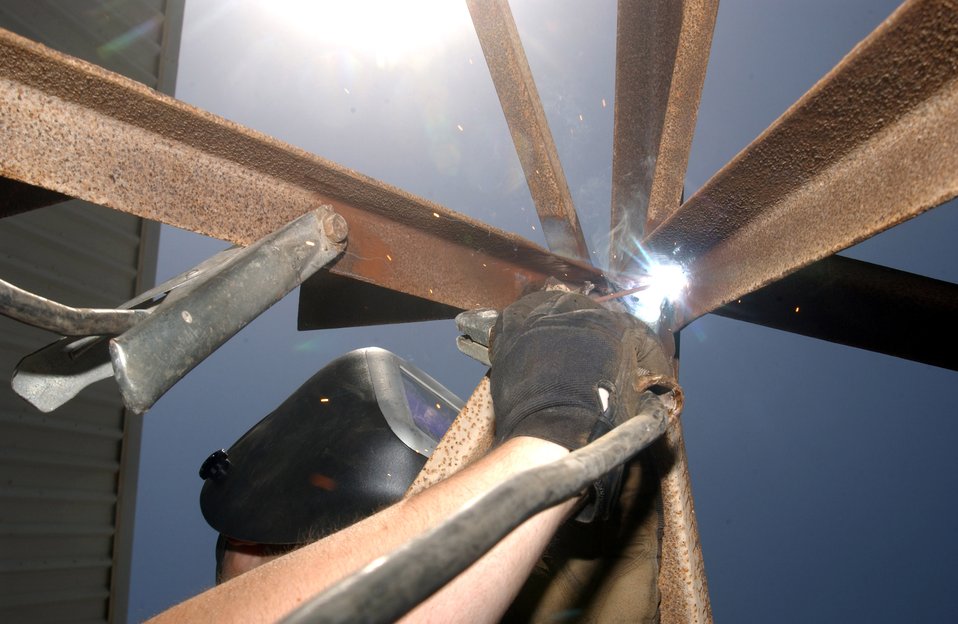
Weld done

Senior Airman Kyle O'Hara welds a piece of angle iron Oct. 11 onto a frame he was repairing at a forward-operating base in Southwest Asia. Airman O'Hara is assigned to the 380th Expeditionary Civil Engineer Squadron and is deployed from Yokota Air Base, Japan.